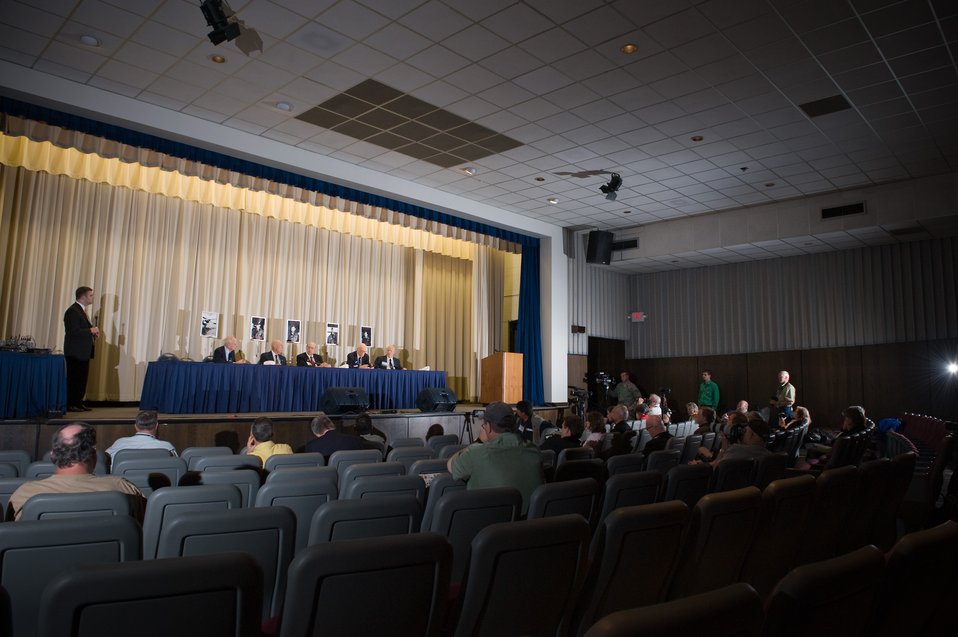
Doolittle Raiders' panel

Robert Badua (standing) and (left-right) C.V. Clines, Doolittle Raiders historian and author moderates a question and answer session between news media and Doolittle Raiders Lt. Col. Richard E. Cole, Lt. Col. Robert L. Hite, Major Thomas Griffin, and Master Sgt. David J. Thatcher. The session was held at the National Museum of the U.S. Air Force at Wright-Patterson Air Force Base, Ohio on April 16, 2010.